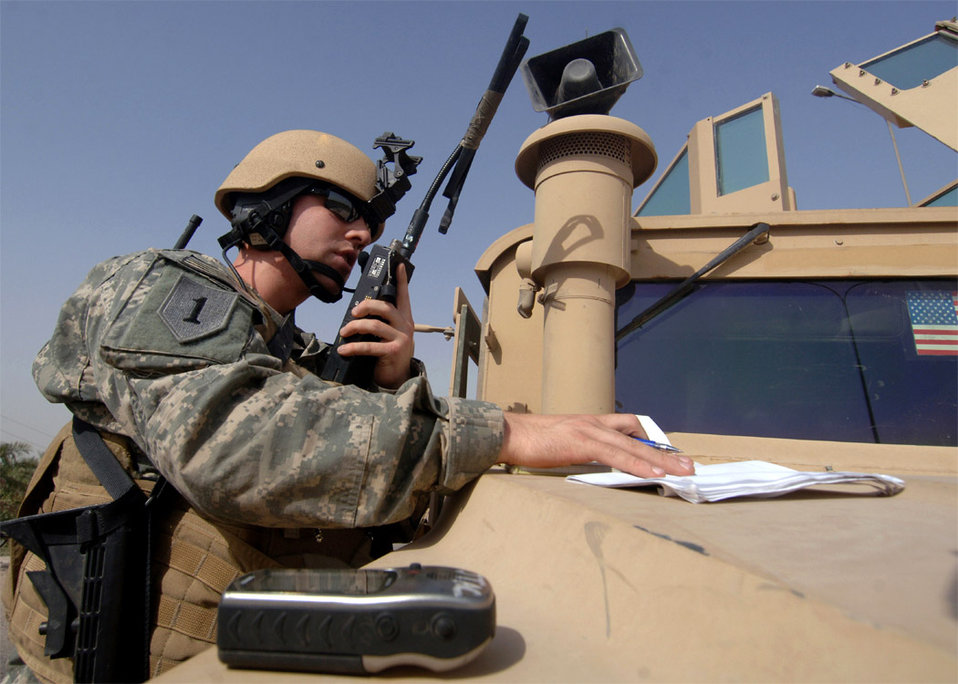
Oct. 10 airpower summary

Senior Airman Zach Laird radios the aircrew of an Air Force B1-B Lancer to get an update on bombs being dropped on a building in Baghdad, Iraq, to neutralize an insurgent detonation point for improvised explosive devices. Airman Laird is assigned to the 3rd Air Support Operations Group.